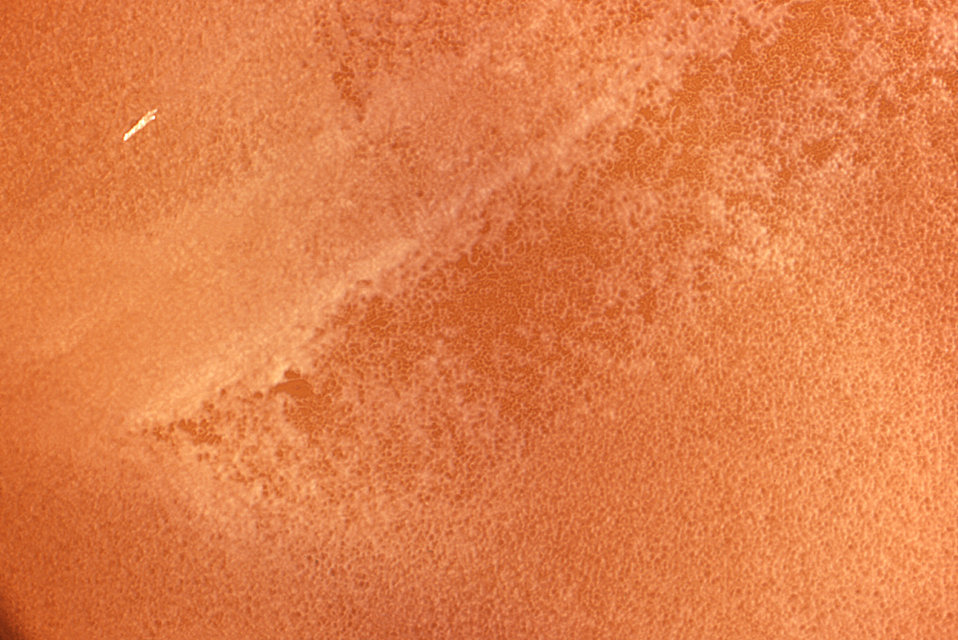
Under only a 2X magnification, this photograph revealed some of the details displayed atop a Petri dish culture of rod-shaped, Gram-positive Clostridium septicum bacteria.